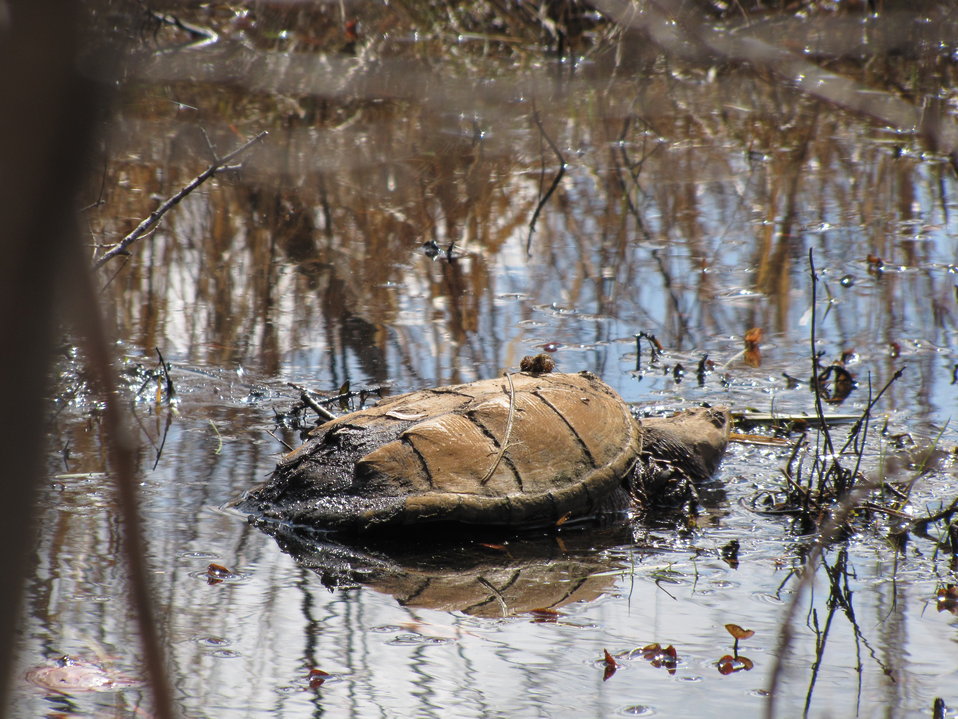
Snapping Turtle